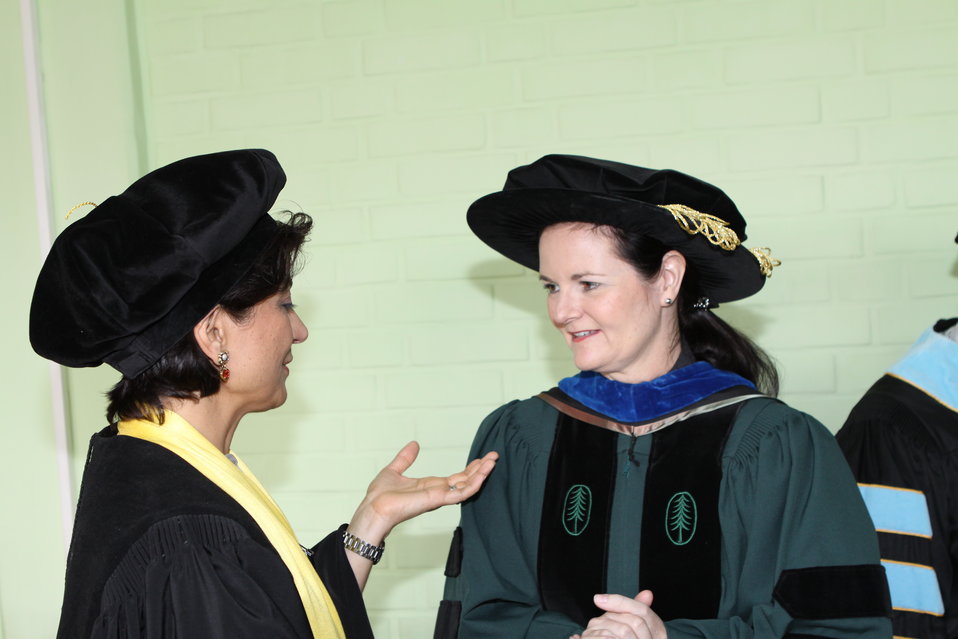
100526 AUAF Graduation 071